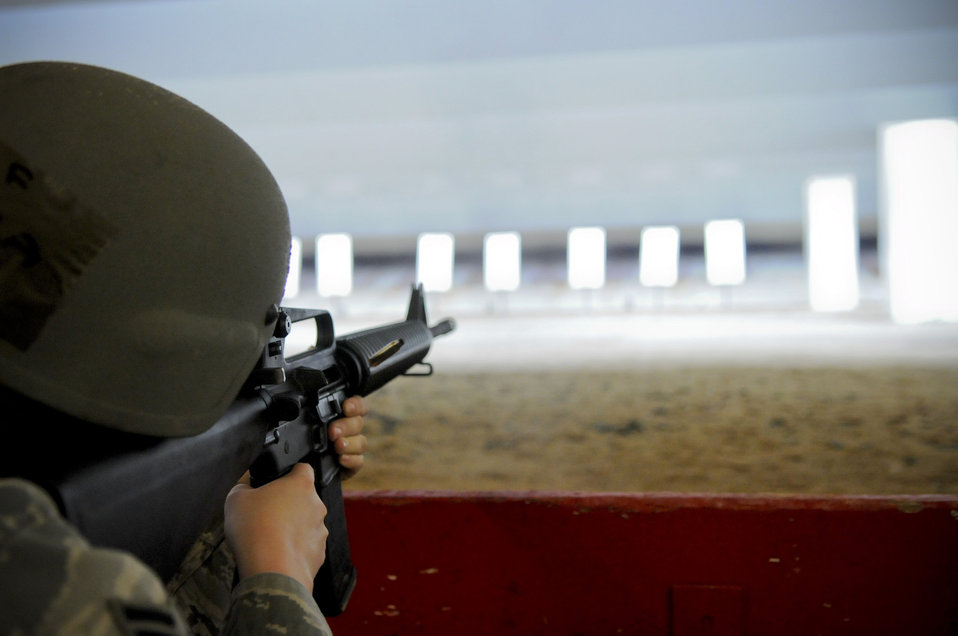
Combat arms training

An Airman shoots at a target June 1, 2011, during combat arms training at Kadena Air Base, Japan.